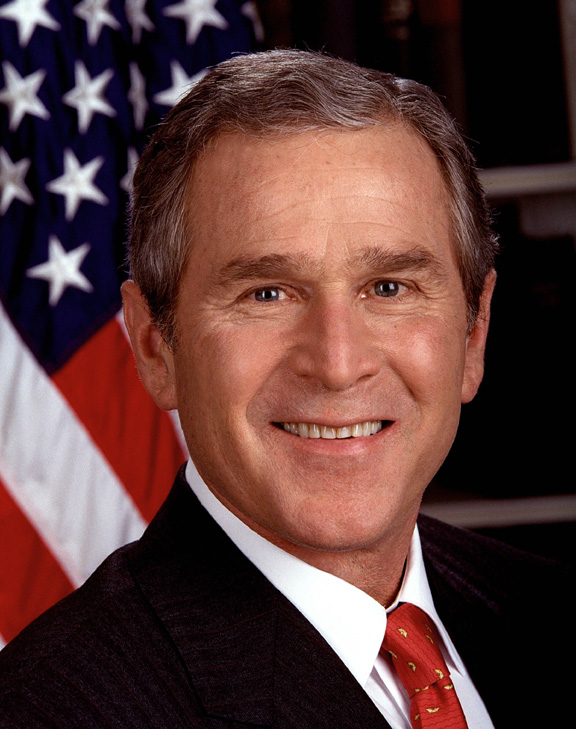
U.S. President

President George W. Bush